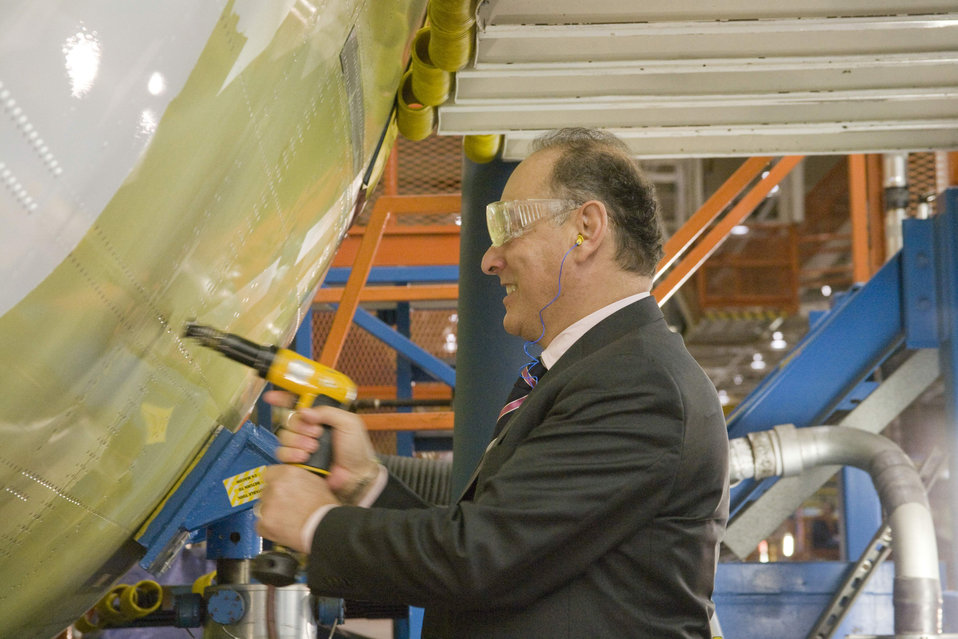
Multinational consortium celebrates milestone of first C-17

Hungarian Minister of Defense Dr. Imre Szekeres drives a ceremonial rivet into the airframe of the first C-17 Globemaster III the 12-nation Strategic Airlift Capability consortium will receive this summer. The Republic of Hungary played a significant role in the